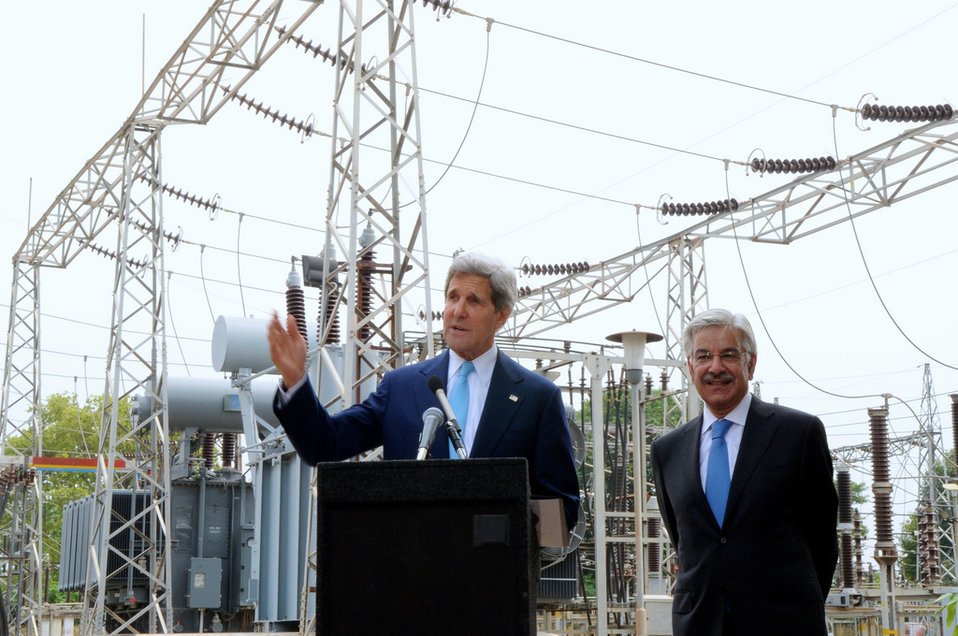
Secretary Kerry Highlights a USAID Power Program

U.S. Secretary of State and Pakistani Minister of Power and Water Khawaja Asif discuss how USAID power meters save electricity during a power station visit in Islamabad, Pakistan, on August 1, 2013.